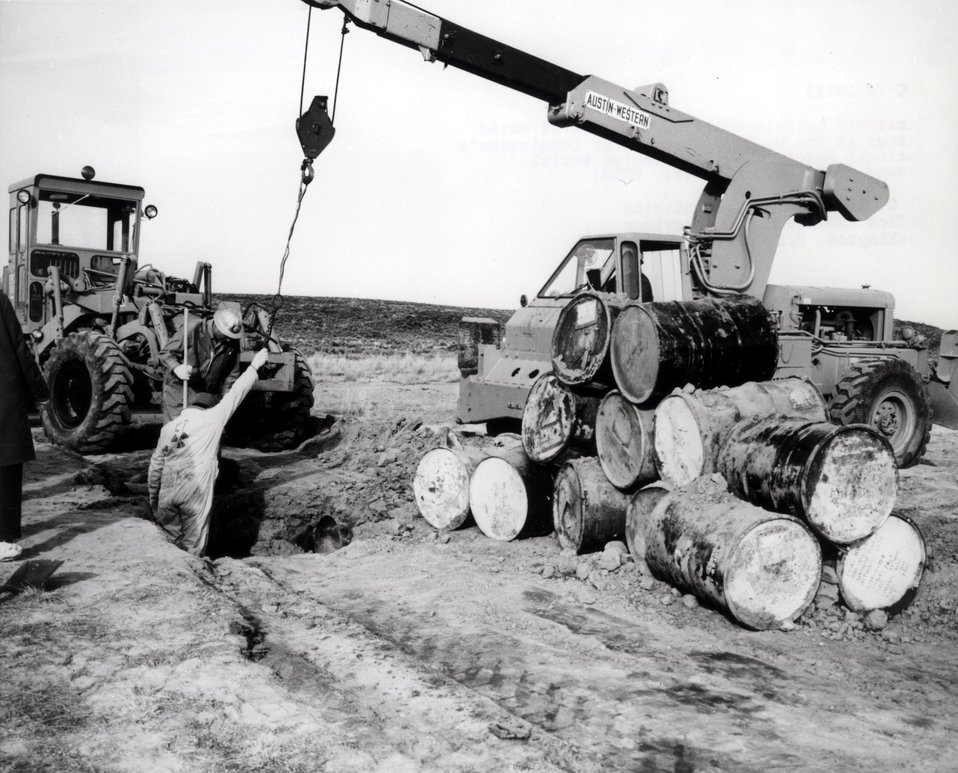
Excavated barrels containing low level solid wastes at the Energy Research and Development Administration National Reactor Testing Station burial ground in Idaho. Circa 1974.